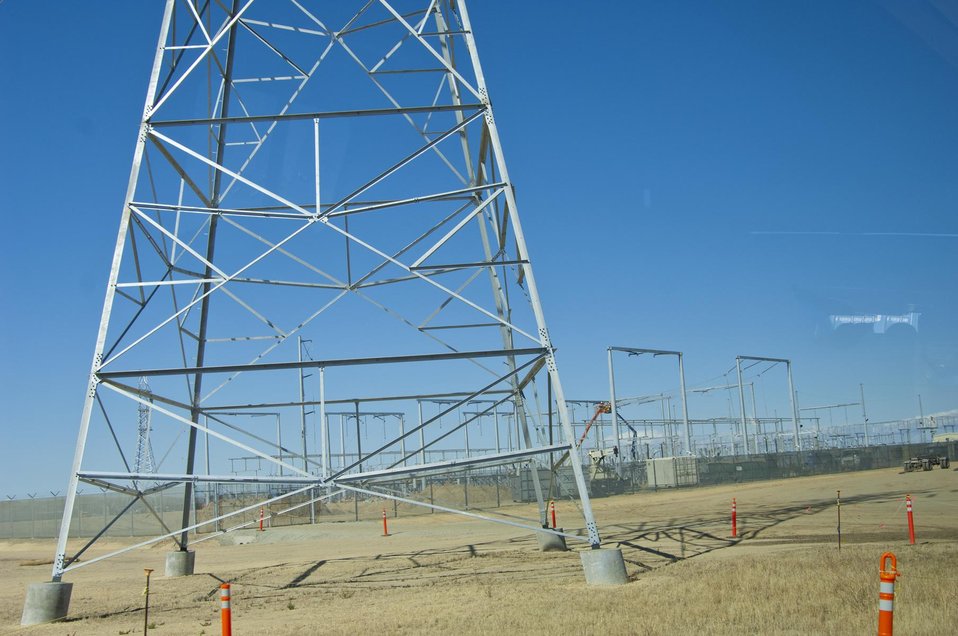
Power Poles for Solar on the Carrizo Plain